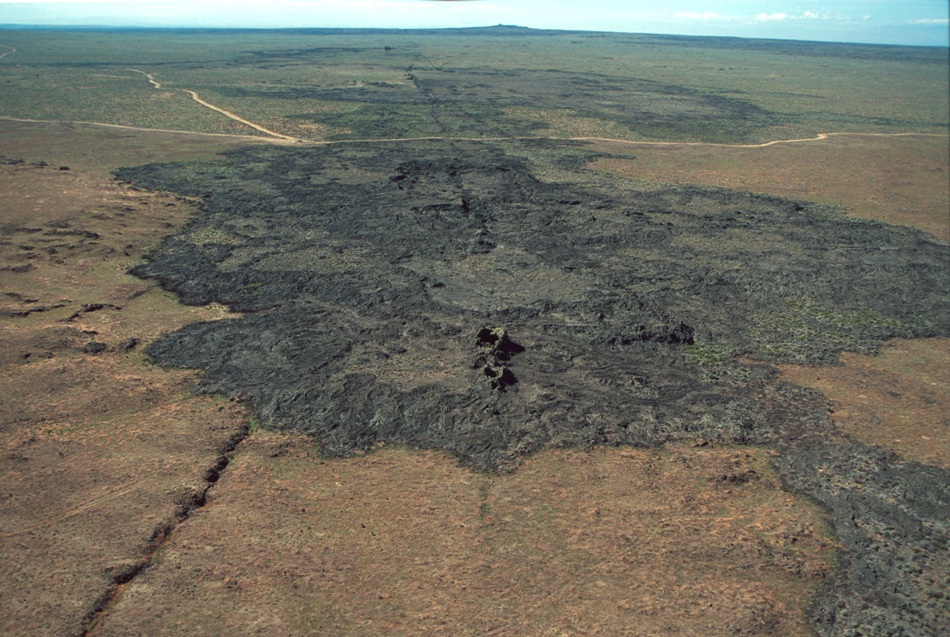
Shoshone Field Office USRD Upper Snake River District